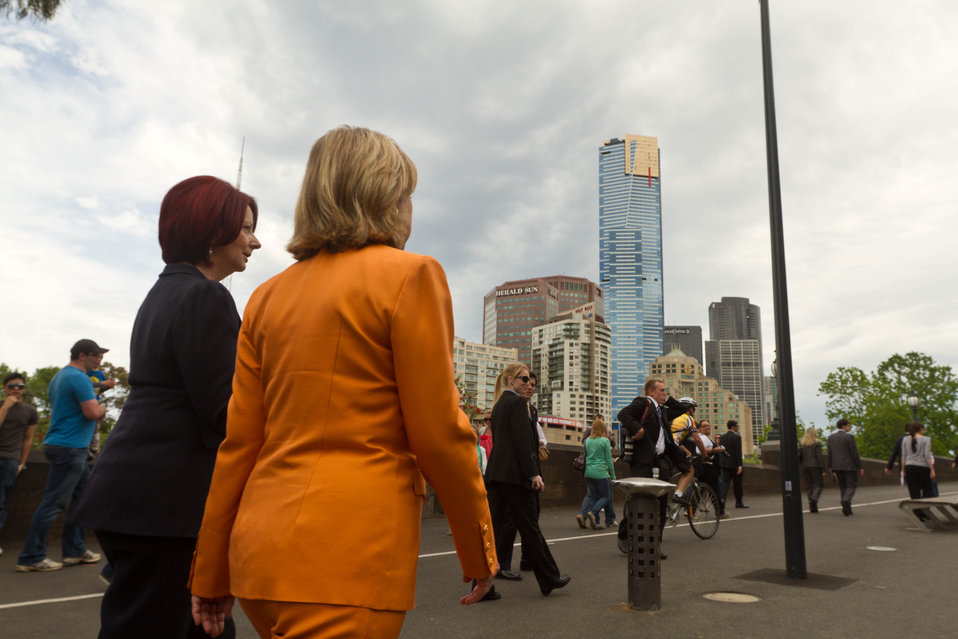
Australian Prime Minister Gillard and Secretary Clinton Walk to Lunch in Melbourne

Australian Prime Minister Julia Gillard, left, points out landmarks while walking to lunch through Federation Square with U.S. Secretary of State Hillary Rodham Clinton in Melbourne, Australia, on November 7, 2010.